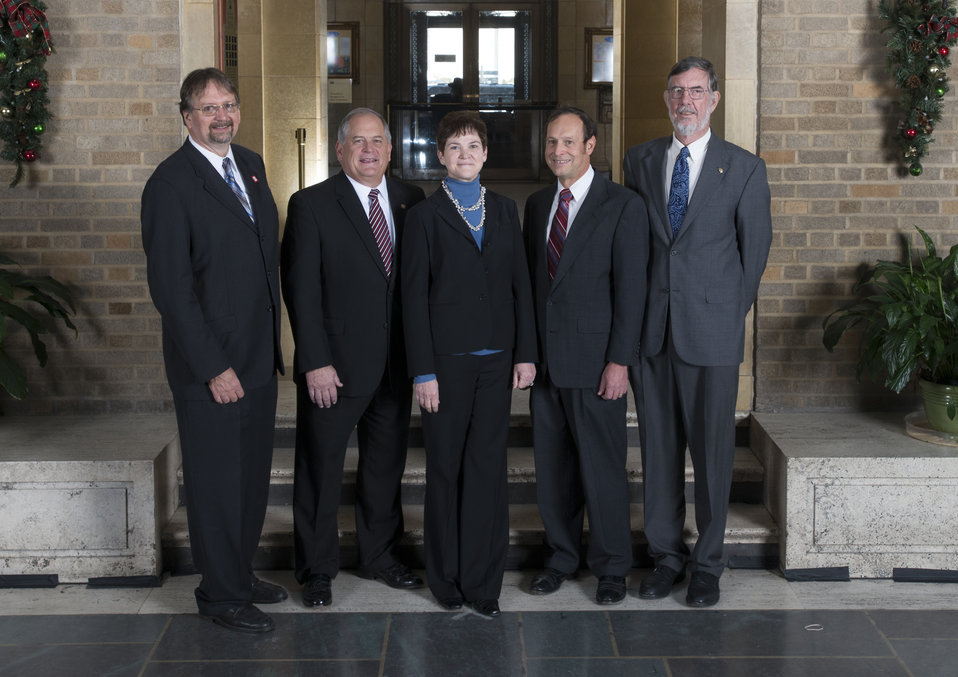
Agriculture Deputy Secretary Krysta Harden stands with the Call To Service Presidential Volunteer Service Awardees at the U.S. Department of Agriculture (USDA) in Washington, D.C. on Wednesday, Dec. 11, 2013. The President’s Call to Service Award is given to employees who have served 4,000 hours or more of service with a qualifying organization over the employee’s lifetime.